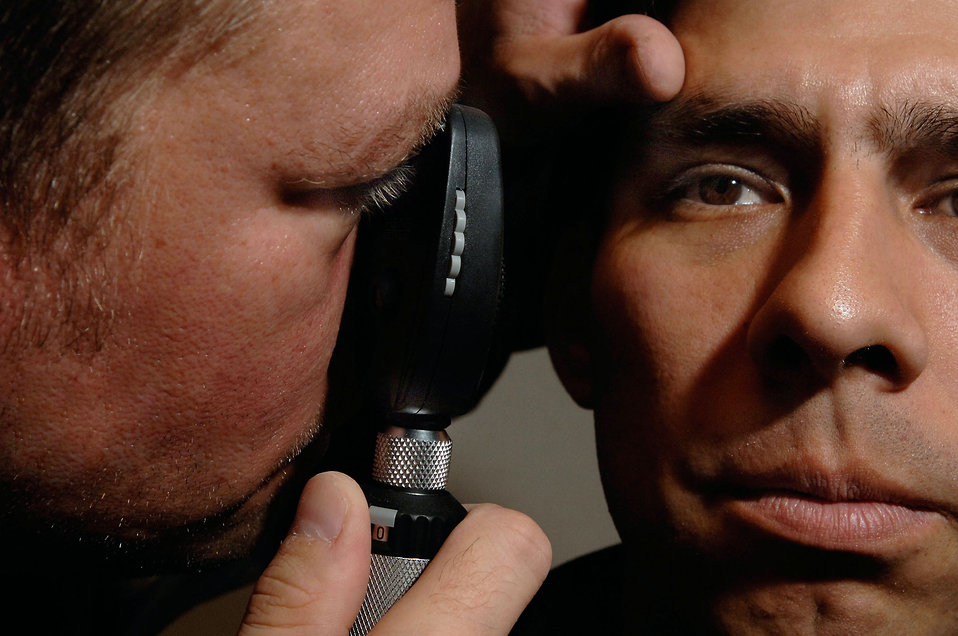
Munitions troops help give Dutch fighters a strike punch

VOLKEL AIR BASE, Netherlands -- Tech. Sgt. Bill Caswell performs a routine eye exam on Capt. Francisco Vega. Keeping 703rd Munitions Maintenance Squadron Airmen and their families here healthy is a full-time job for Sergeant Caswell, an independent duty medical technician.